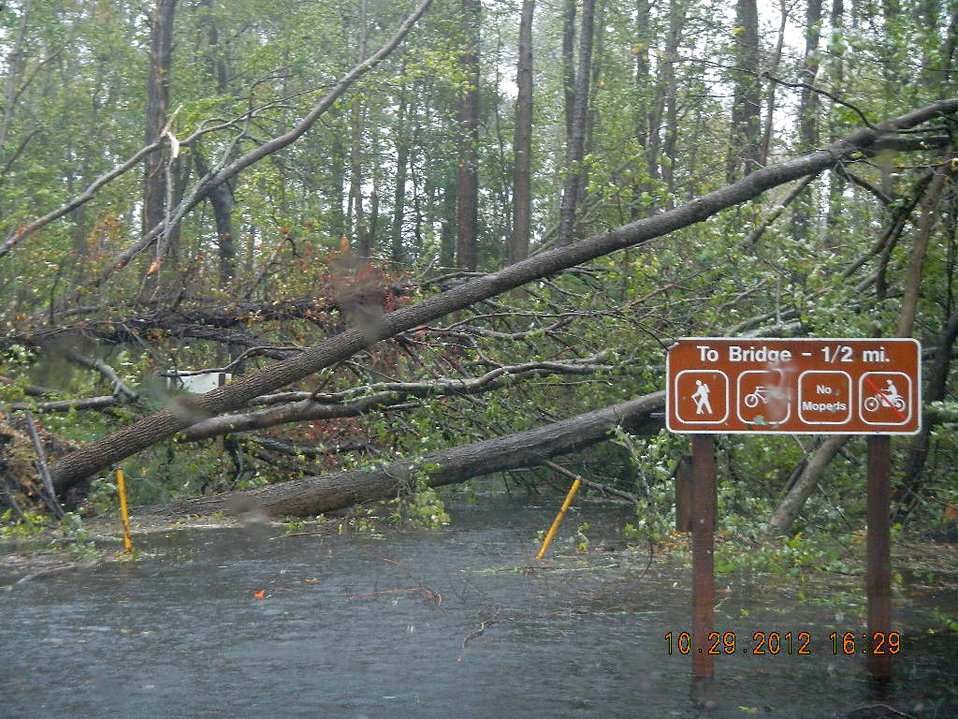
Hurricane Sandy hit Chincoteague National Wildlife Refuge (VA)

Fallen trees.